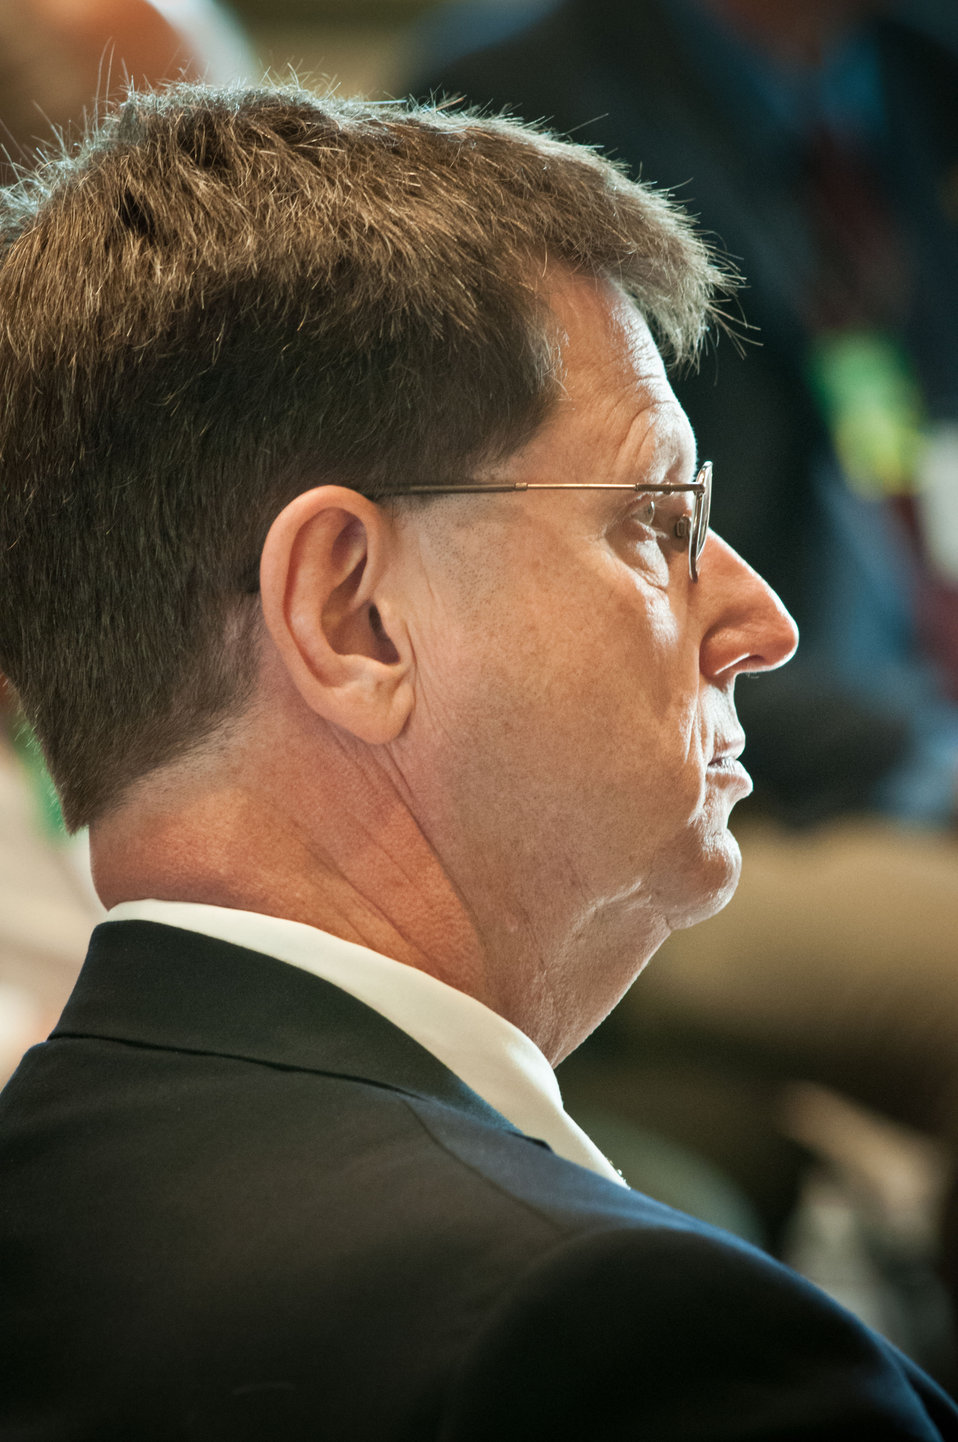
Tom Steever, Brownfield Ag News for America and President, National Association of Farm Broadcasters listens to Agriculture Secretary Tom Vilsack, United States Department of Agriculture officials and Obama Administration officials at the Spring National Association of Farm Broadcasters (NAFB), “Washington Watch” member retreat in Washington, D.C. This year the meeting was held in the Eisenhower Executive Office Building, Indian Treaty Room on Tuesday, April 24, 2012, featuring United Sates Department of Agriculture and Obama Administration officials. This opportunity provides an occasion to highlight efforts to rebuild and revitalize rural America, including efforts for the agricultural community. NAFB is the recognized and trusted source of agricultural and rural lifestyle information for America with approximately 200 members who broadcast via radio in nearly every state in the country.